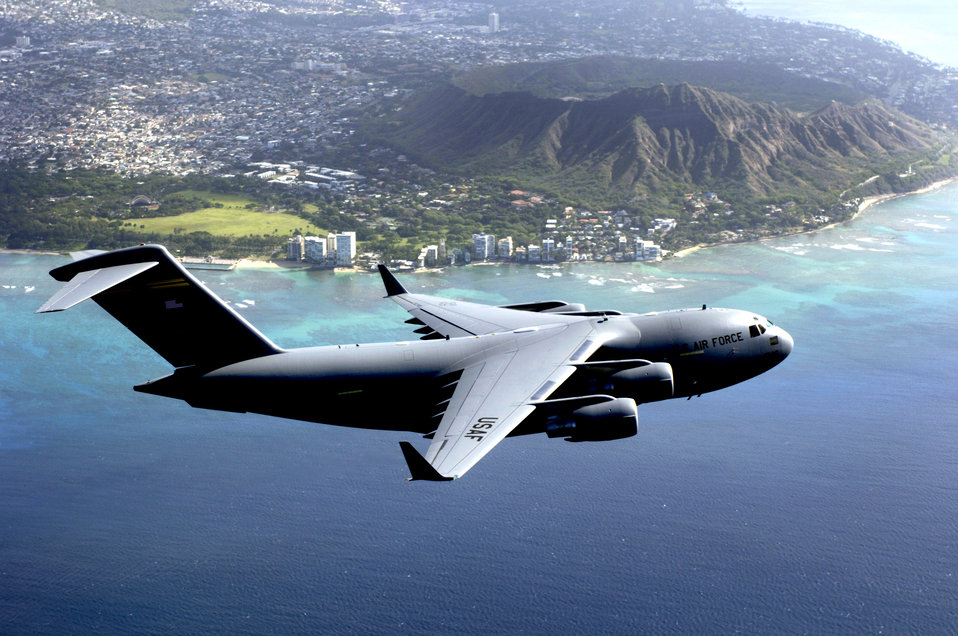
C-17 ceremony

HICKAM AIR FORCE BASE, Hawaii -- The first Hawaii-based C-17 Globemaster III flies past Diamond Head volcanic crater on its way to Hickam for the official arrival ceremony, Feb 8.